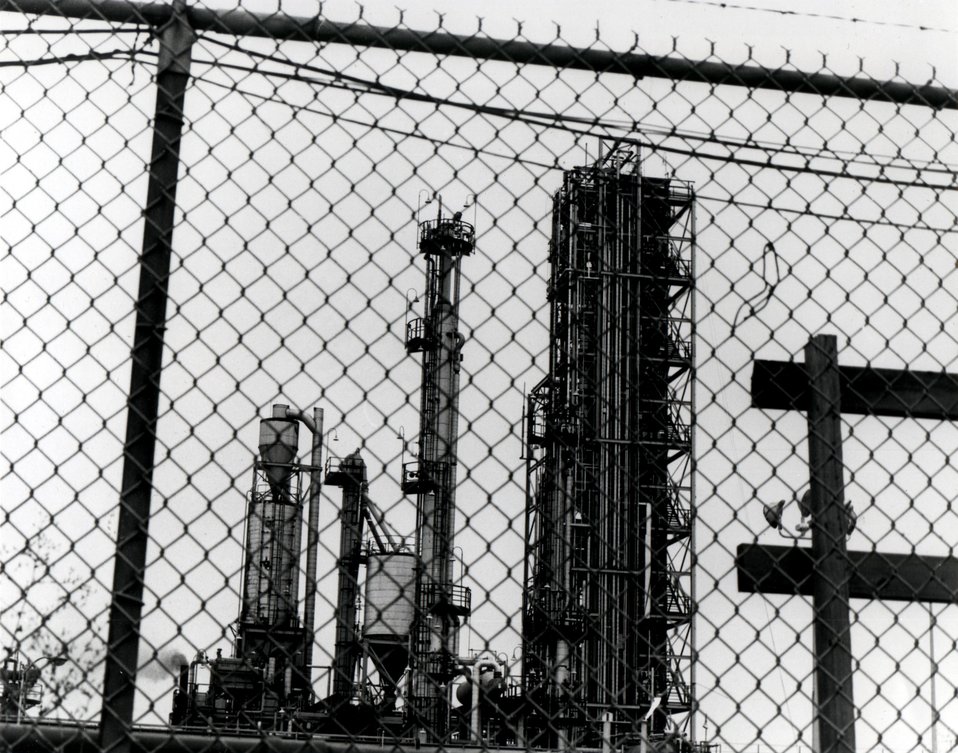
A view of the Energy Research and Development Administration's (HYGAS) High-Btu Gasification pilot plant near Chicago, Ill. Circa 1975.